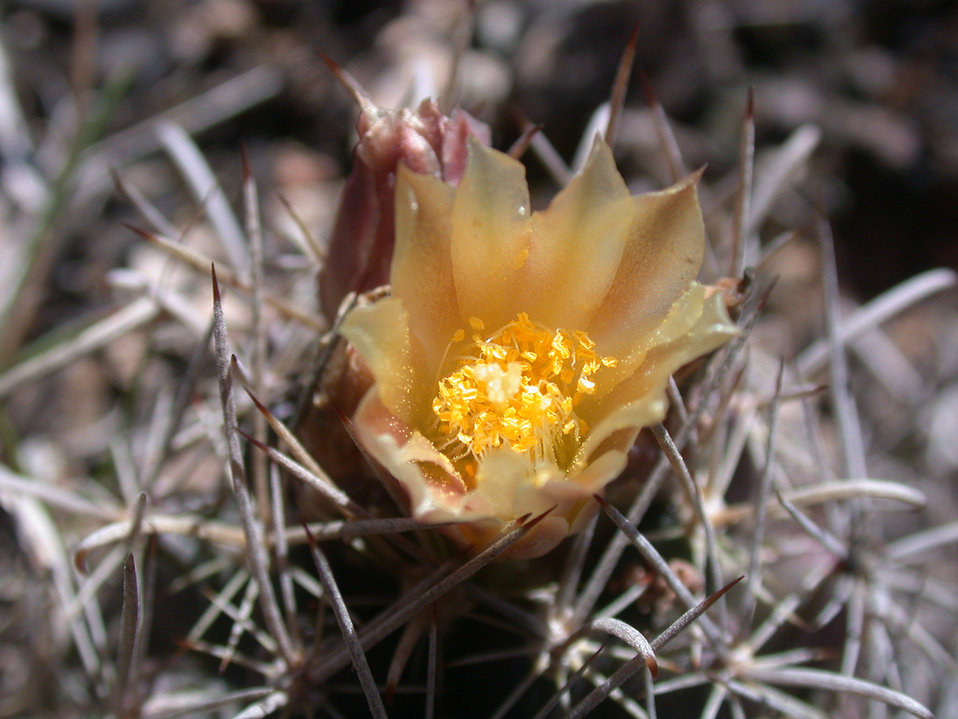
Endangered Tobusch fishhook cactus (Ancistrocactus tobuschii)